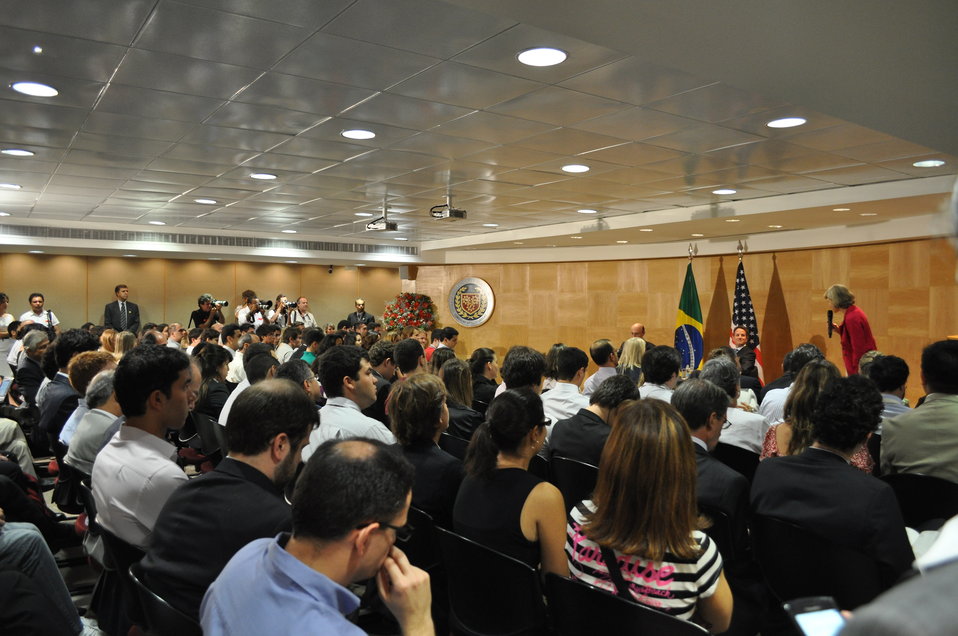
Secretary Geithner Travels to Brazil, 02/07/2011

On Monday, February 7, 2011, Secretary Geithner visited Fundação Getulio Vargas (FGV) in Sao Paulo for a discussion with university students moderated by former Brazilian Central Bank Governor Henrique Meirelles.